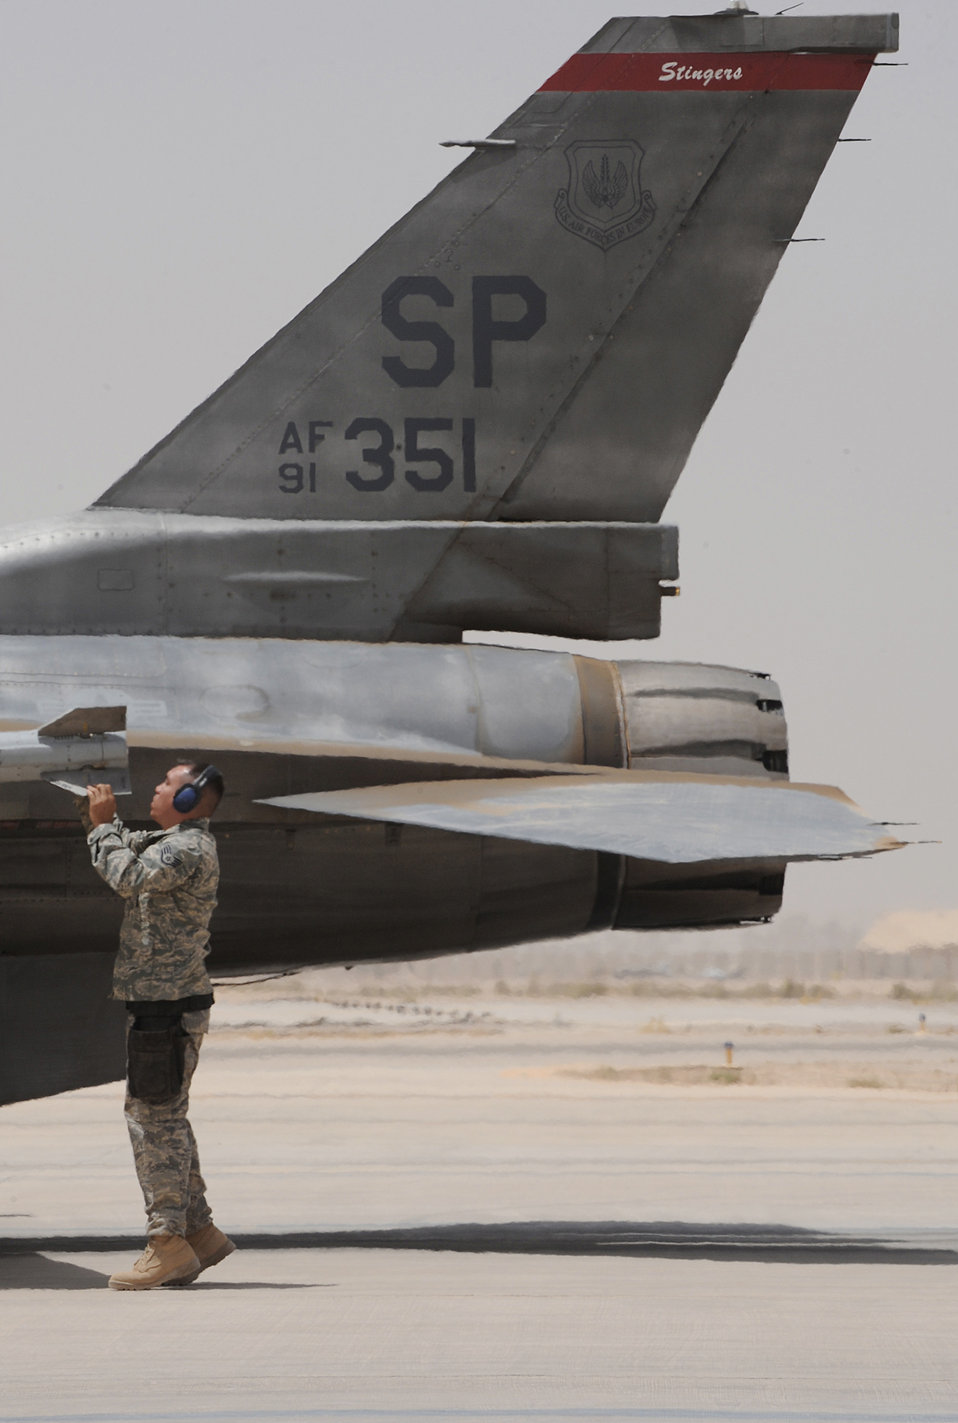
Weapons loaders arm jets for the fight

Staff Sgt. David Yocom makes a final check and pulls the safety pins from weapons loaded onto an F-16 Fighting Falcon before takeoff June 29 at Joint Base Balad, Iraq. Sergeant Yocom is a 332nd Expeditionary Aircraft Maintenance Squadron weapon load crew chief. He is deployed from Spangdahlem Air Base, Germany, and is a native of Oldbridge, N.J.